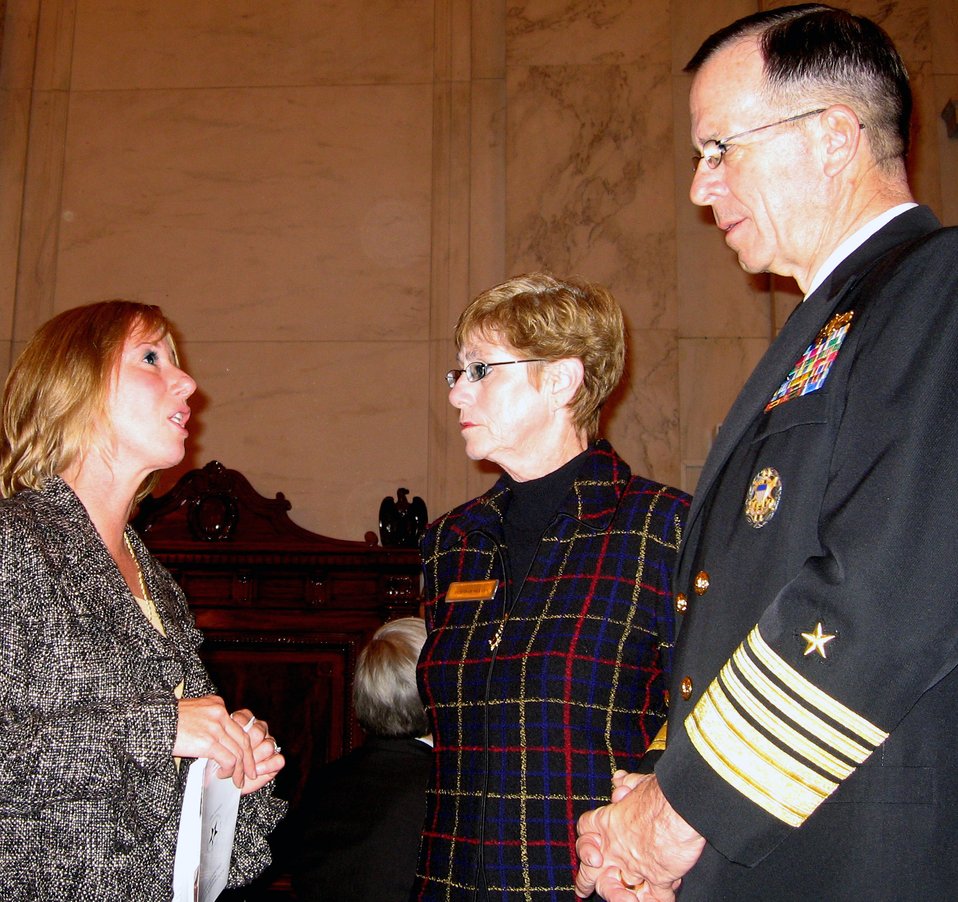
Children of fallen troops honored at remembrance ceremonies

Beth Downs, left, talks with Deborah Mullen and her husband, Chairman of the Joint Chiefs of Staff Navy Adm. Michael G. Mullen, at a Gold Medal of Remembrance presentation ceremony at the Russell Senate Building in Washington, D.C., Oct. 29. Each of Downs' three children received a gold medal at the ceremony.